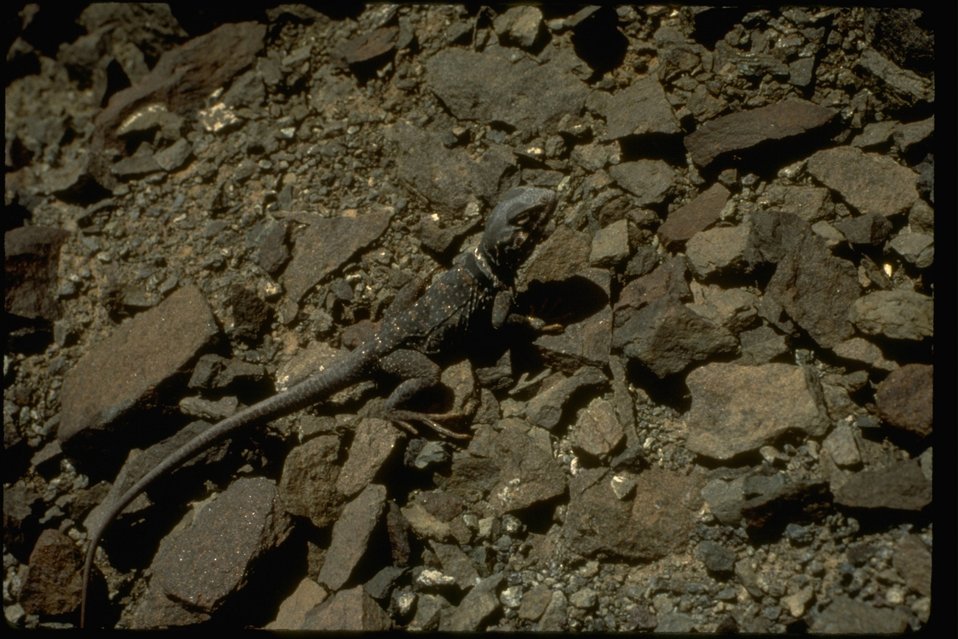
A Collar Lizard found in the East Alvord Wilderness Study Area. OR 2-73A